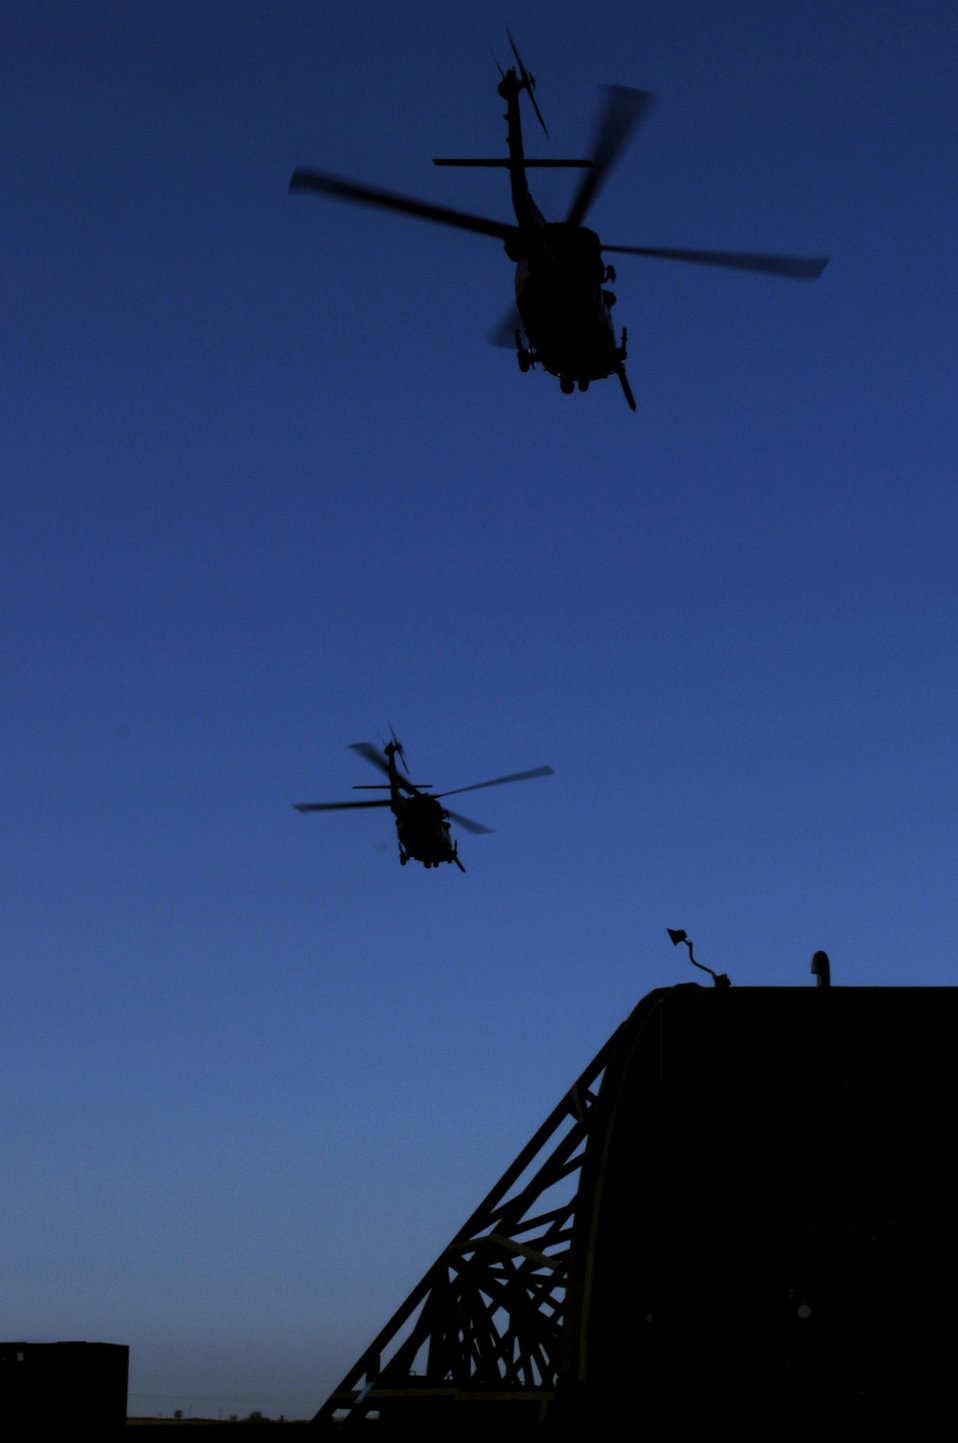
Airmen lead effort to rescue injured crewman at sea

Two HH-60G Pave Hawks with the 56th Rescue Squadron take off to fly more than 500 miles west of Ireland for a real-world rescue mission Dec. 10 at Royal Air Force Lakenheath, England. A crew member of a cargo ship suffered a serious head injury requiring a medical evacuation, and U.S. forces were called upon to help.